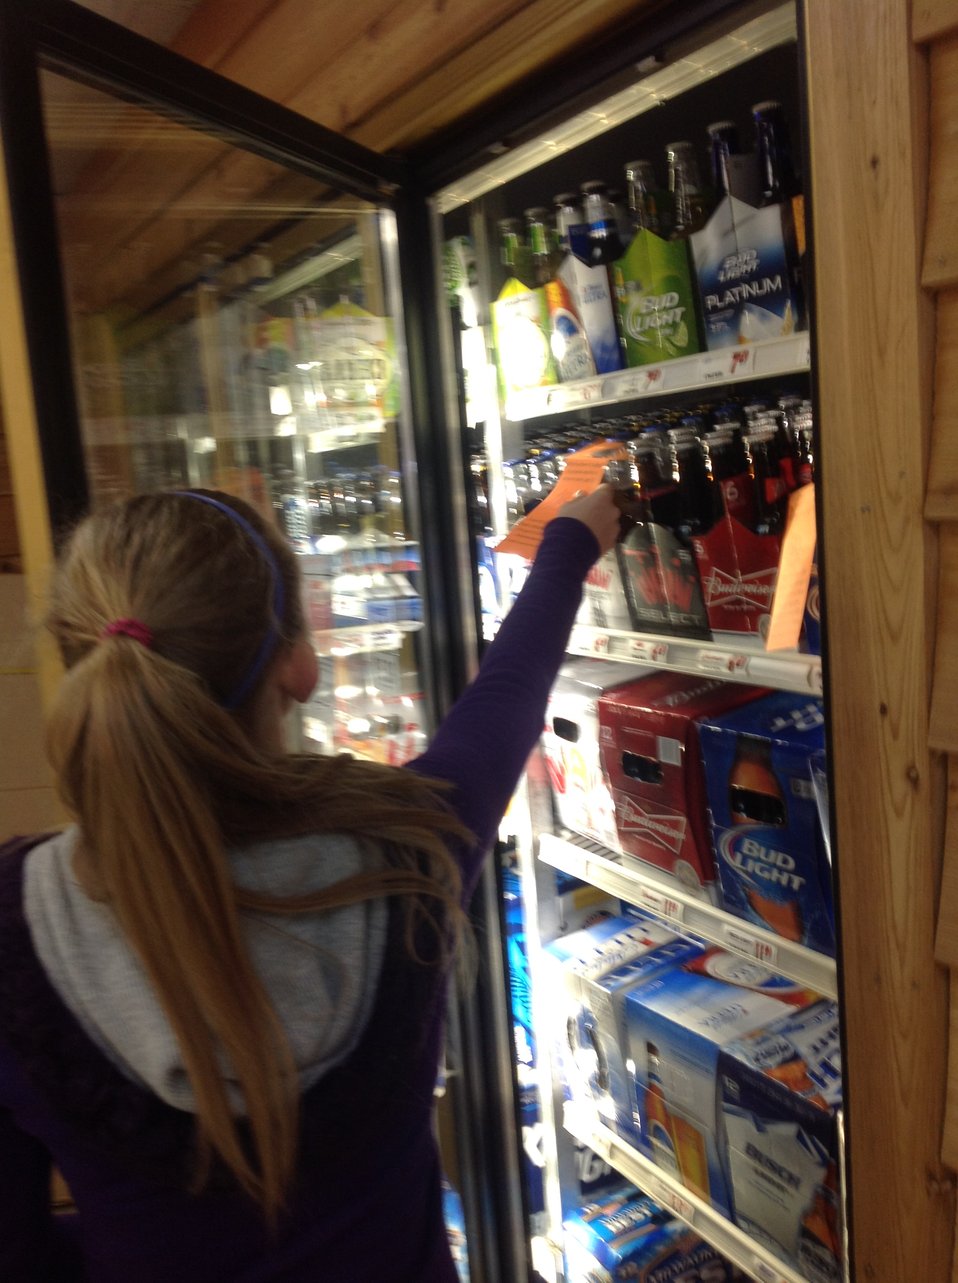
Getting the Word Out

Teenagers from the Van Buren County SAFE Coalition's, Youth Leadership Council (YLC) in Keosauqua, Iowa participate in various events during National Drug Facts Week, 2014.